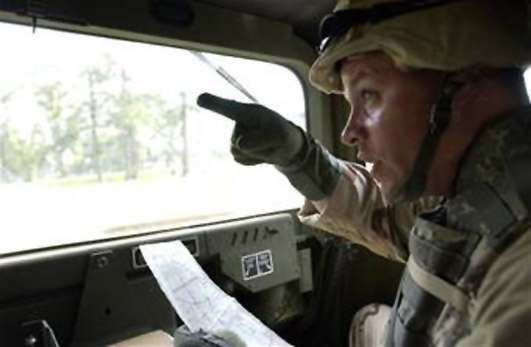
Air Force trains to fill Army deployments

Capt. Michael Schroeder searches for a land navigation point Aug. 30 using techniques learned at Camp Shelby, Miss. Camp Shelby is one of several Army installations providing training to military personnel preparing to deploy to Southwest Asia.